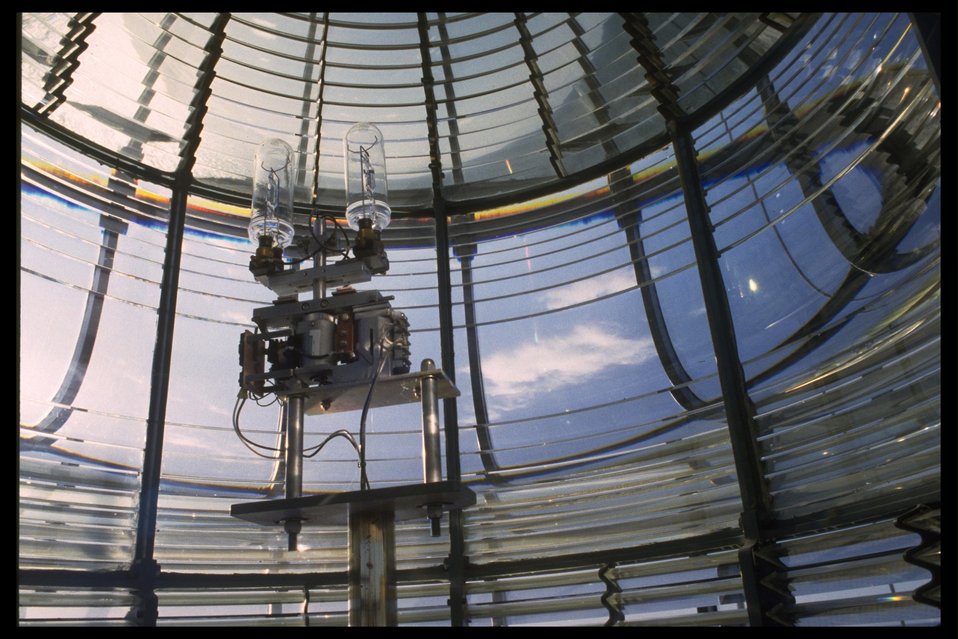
The lightbulb (1000 watt lens) on the interior of the Yaquina Head lighthouse.